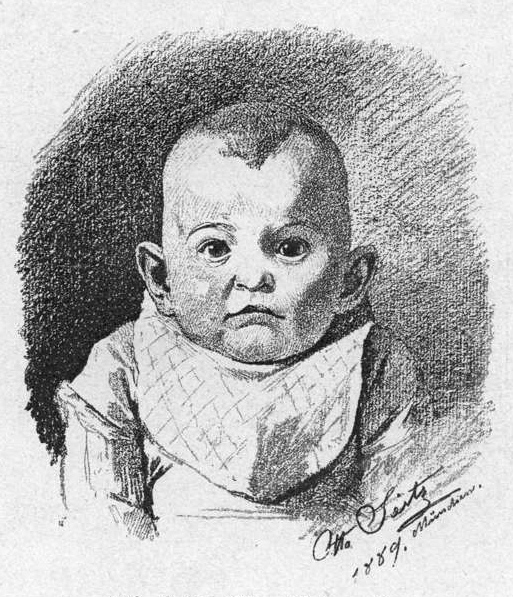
Kinderporträt